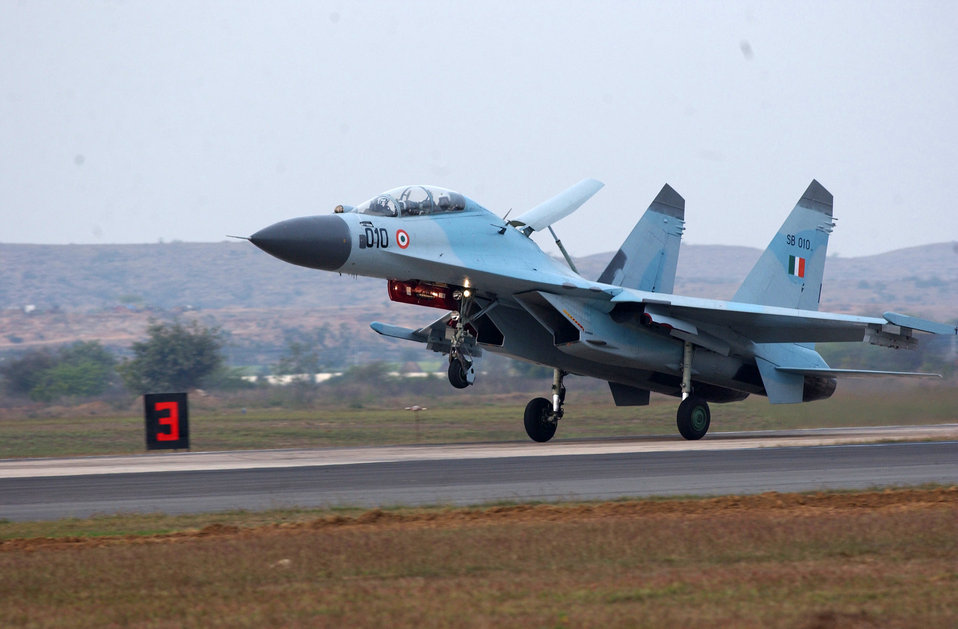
Cope India '04

GWALIOR AIR FORCE STATION, India -- An Indian air force SU-30K Flanker lands here following a simulated combat mission with U.S. Air Force F-15 Eagles deployed from Elmendorf Air Force Base, Alaska. About 150 U.S. airmen are here supporting Cope India '04, the first bilateral fighter exercise between the two air forces in more than 40 years.